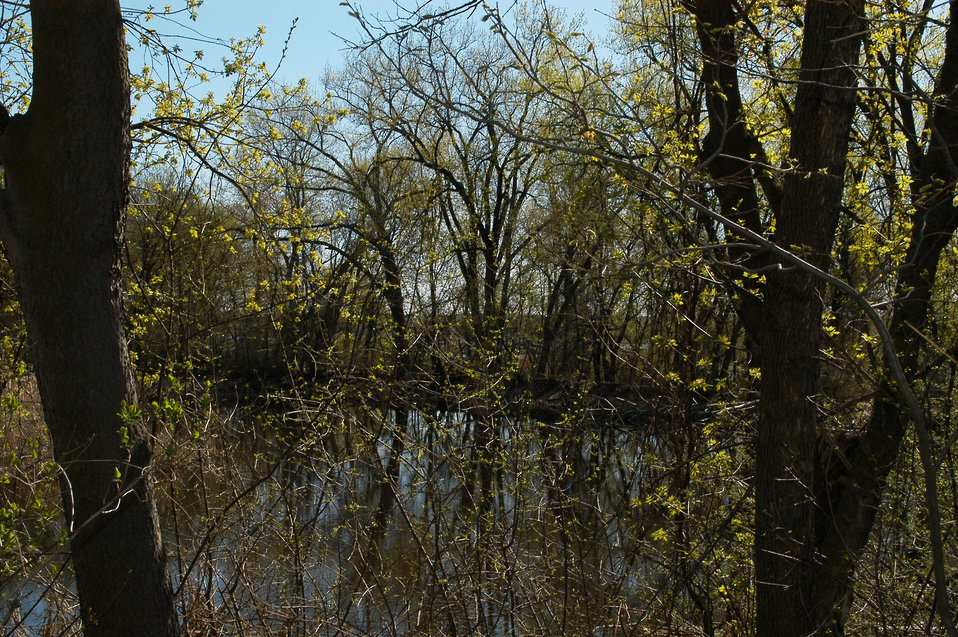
Springtime at the Bass Ponds